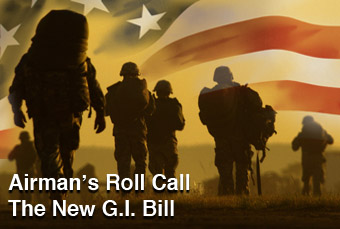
Airman's Roll Call

This week's Airman's Roll Call highlights the new G.I. Bill.